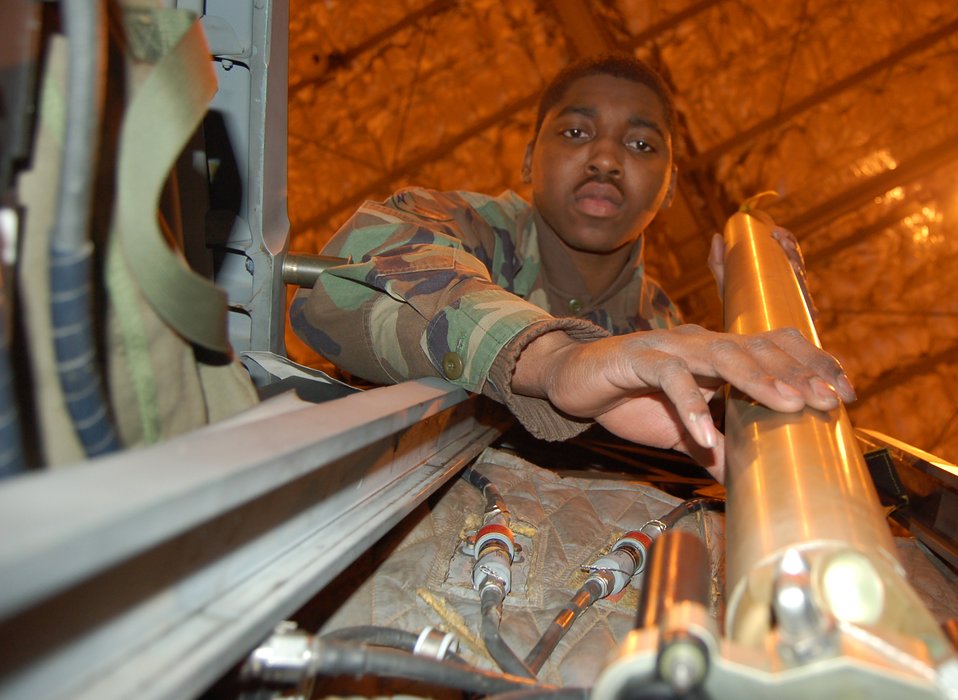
Elmendorf Airmen put AFSO 21 to work

Airman 1st Class Keith Billings verifies the ballistic fitting elbows on a CKU-5B/A rocket catapult are in their proper place during the egress portion of an aircraft transfer inspection Feb. 22 at Elmendorf Air Force Base, Alaska. The rocket catapult ejects the seat in the F-15E Strike Eagle at 43 feet per second. This is part of the aircraft transfer inspection is one of the steps changed under Elmendorf AFB's Air Force Smart Operations for the 21st century aircraft transfer program. Instead of taking 10 days, the inspection is now complete in three. Airman Billings is an aircrew egress journeyman with the 3rd Component Maintenance Squadron.